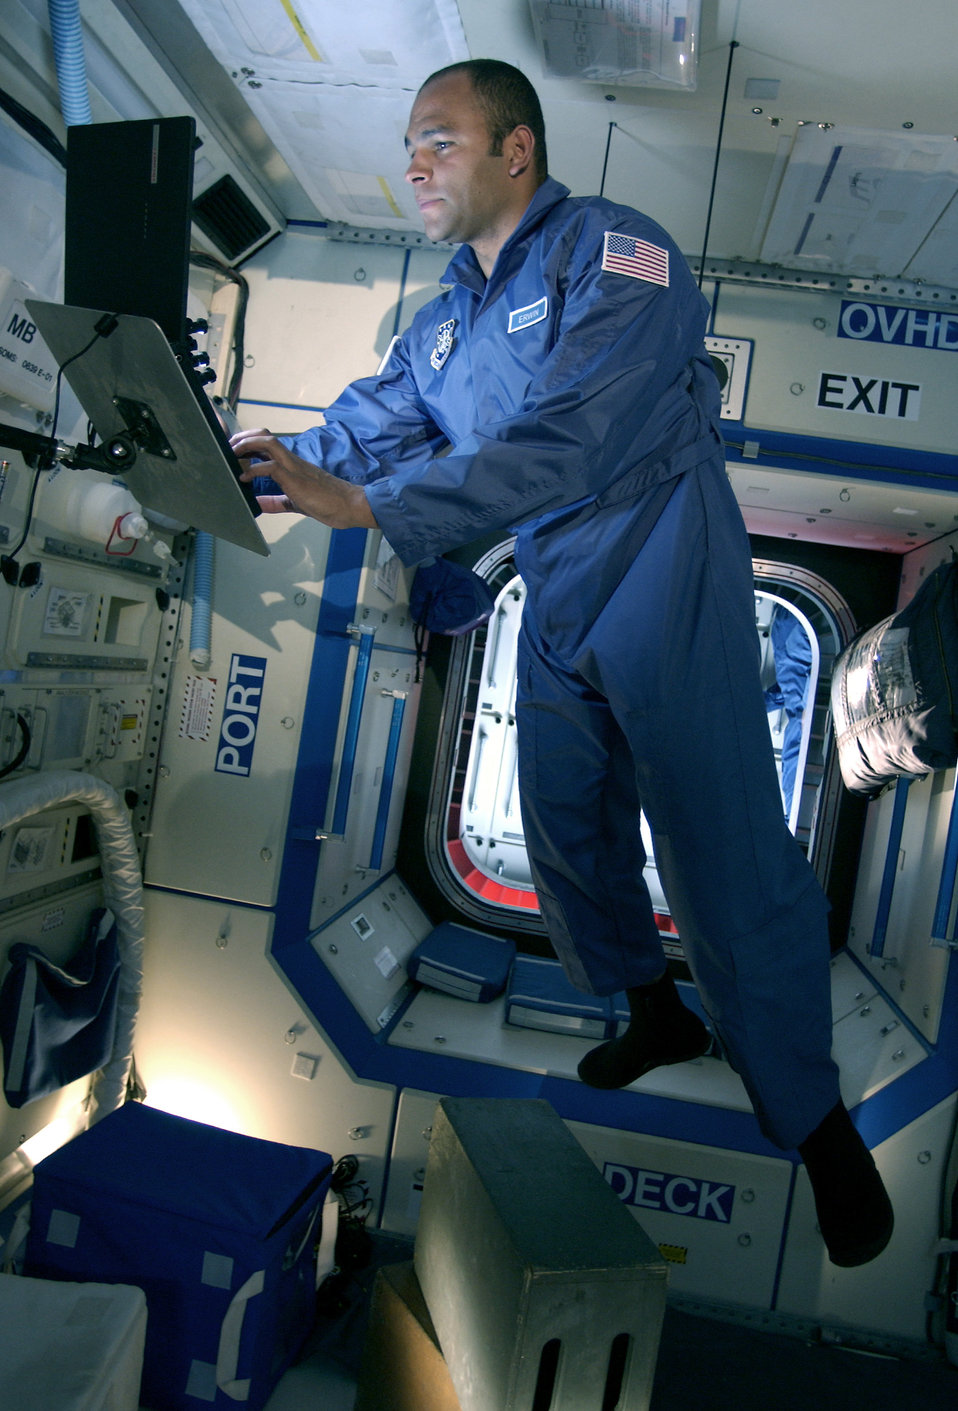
Filming begins on new Air Force commercials

HOLLYWOOD -- Capt. Johnny Erwin plays an astronaut during filming of new Air Force commercials at Universal Studios here May 19. Four ads being filmed over two weeks in several locations throughout California will air in the fall. Captain Erwin is an acquisitions officer for space-based infrared systems at Los Angeles Air Force Base, Calif.